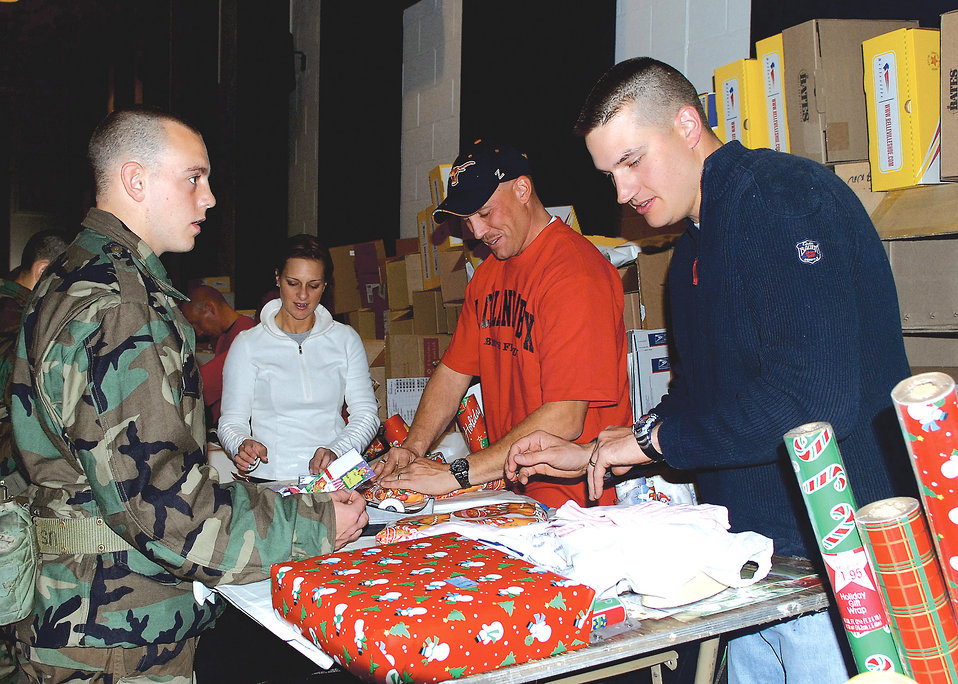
Trainees given chance to shop, ship presents

Volunteers wrap gifts purchased by the basic military trainees during the annual Shop-A-Trainee program Dec. 9 at Lackland Air Force Base, Texas. Under the Shop-A-Trainee program, trainees in the first, second and fifth week of training, plus trainees on medical hold, were able to go to the Army and Air Force Exchange Service to purchase holiday gifts.